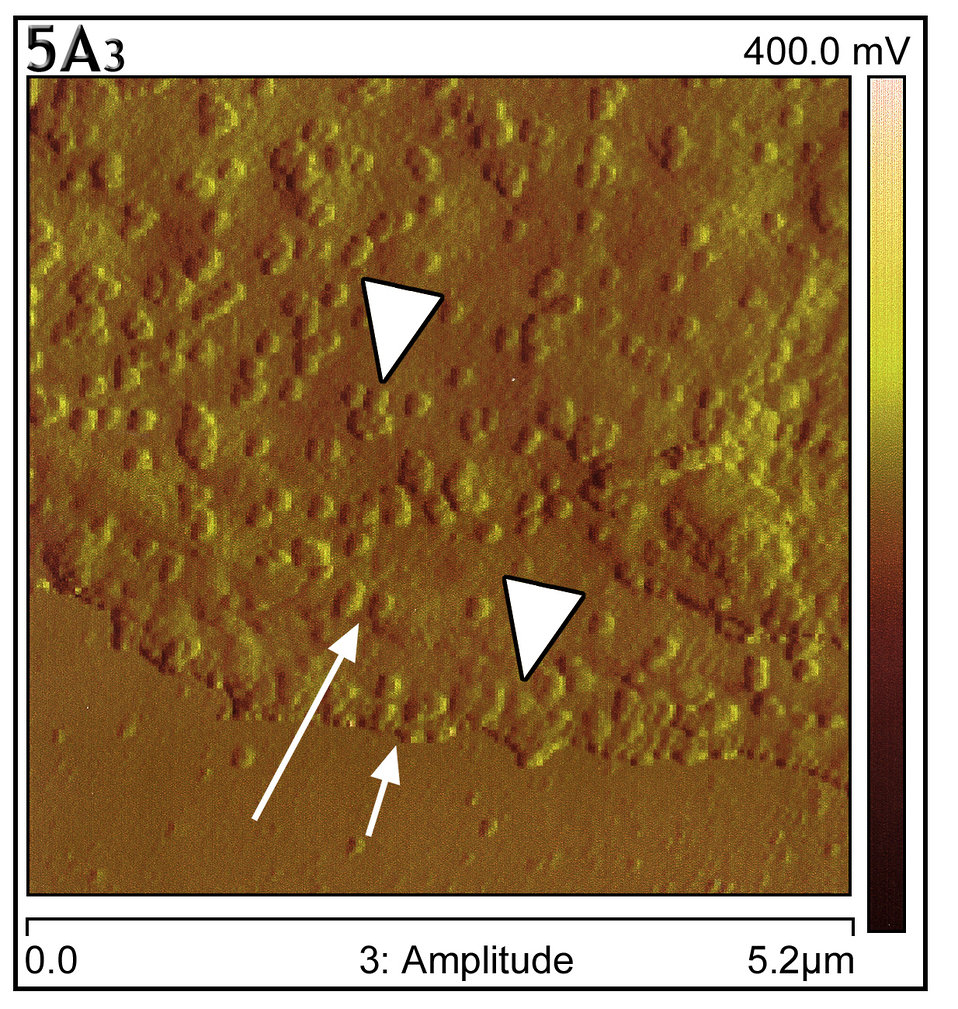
This atomic force microscopy image shows a thickened, layered configuration found at the edge of infected Vero E6 culture cells.